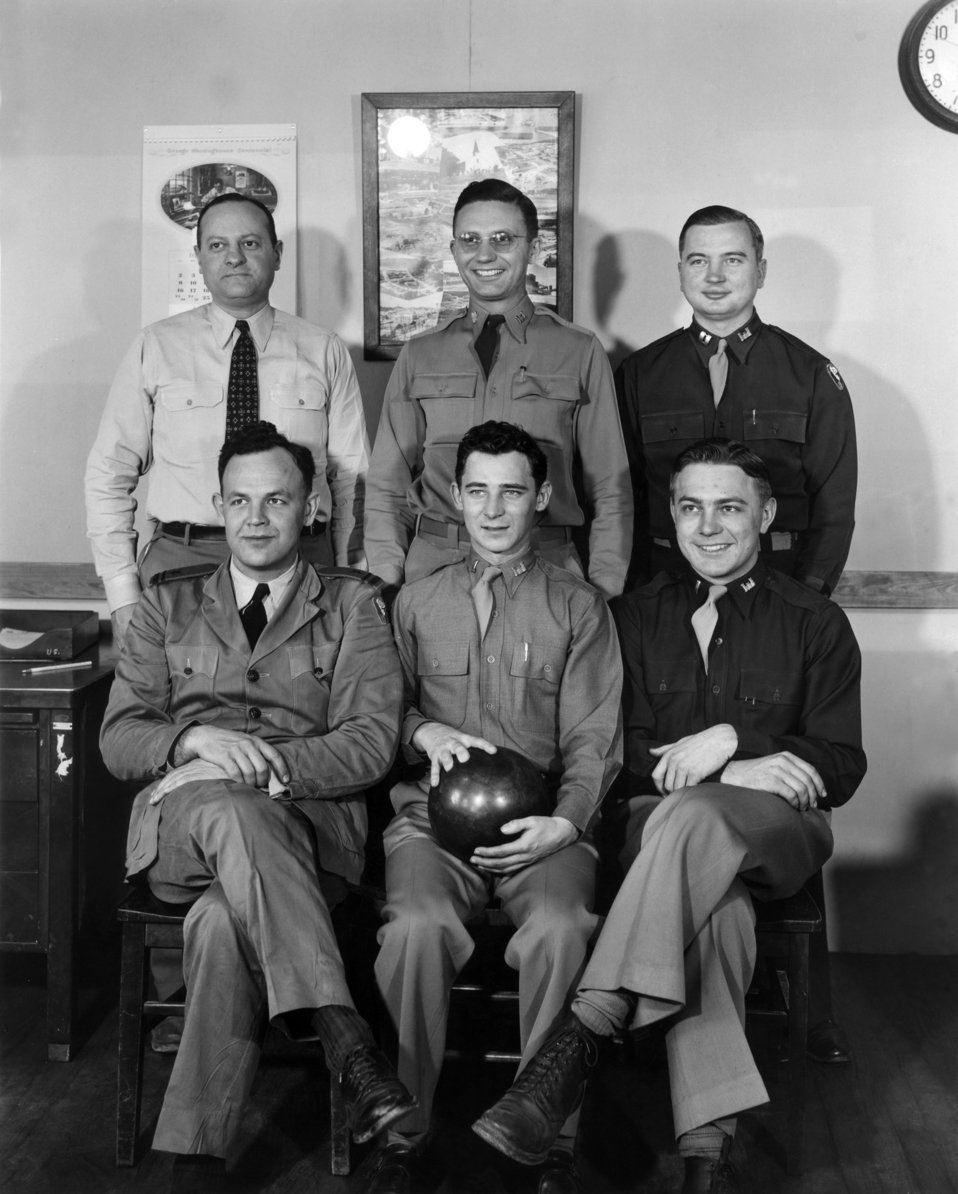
Bowling Team Oak Ridge

5-362 DOE photo by Ed Wescott Bowling Team Oak Ridge Tennessee 1944